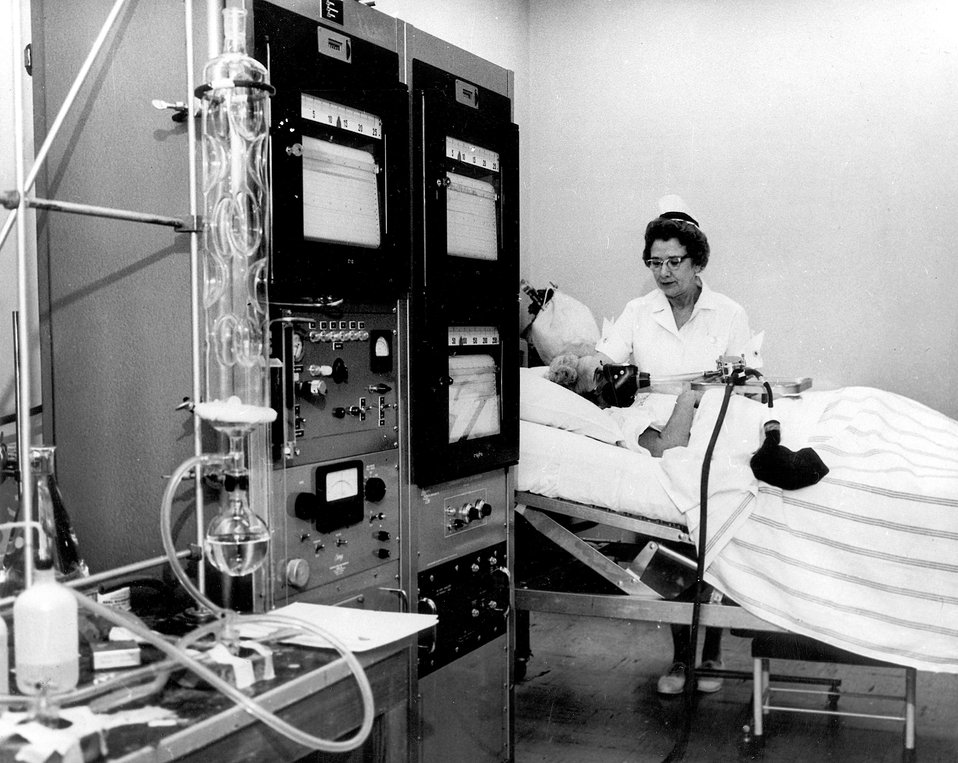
In studies of intermediary metabolism of carbohydrates and amino acids, which have been labeled with radioactive carbon and tritium, the breath of a patient is collected for continuous measurement of the C14 O2.
c.1963